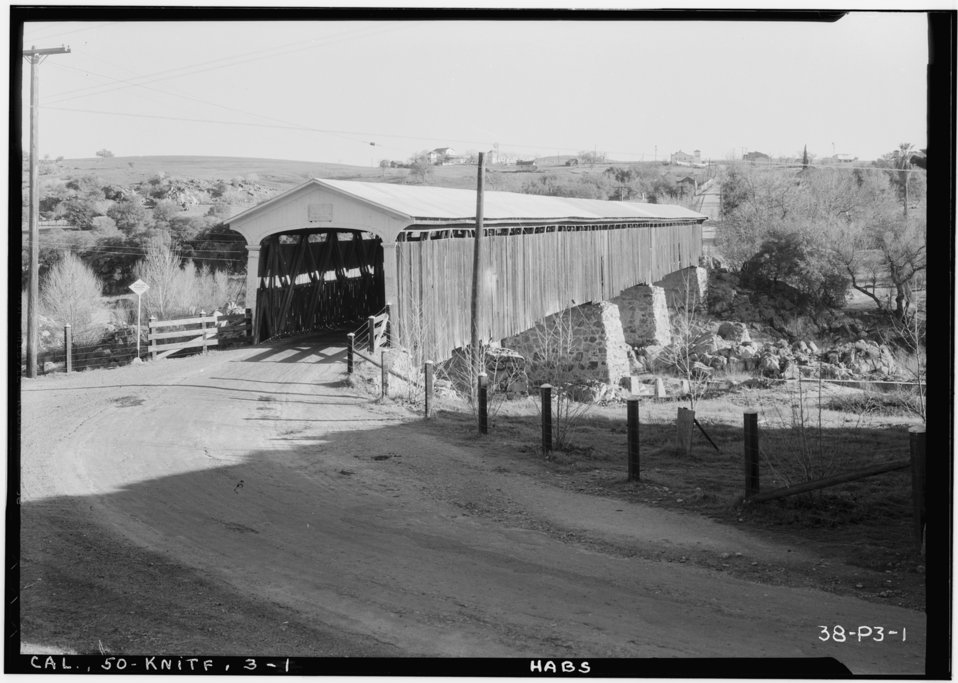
Knights Ferry Covered Bridge

Roger Sturtevant took this photo of the Knights Ferry Covered Bridge near Oakdale, Calif., and cataloged it in the Library of Congress in 1934 for the Historic American Buildings Survey. HABS, the federal government’s first preservation program and a New Deal-era effort to support unemployed photographers and architects, is the only depression-era program still in operation today. The HABS collection is among the largest and most heavily used in the Prints and Photographs Division of the Library of Congress.